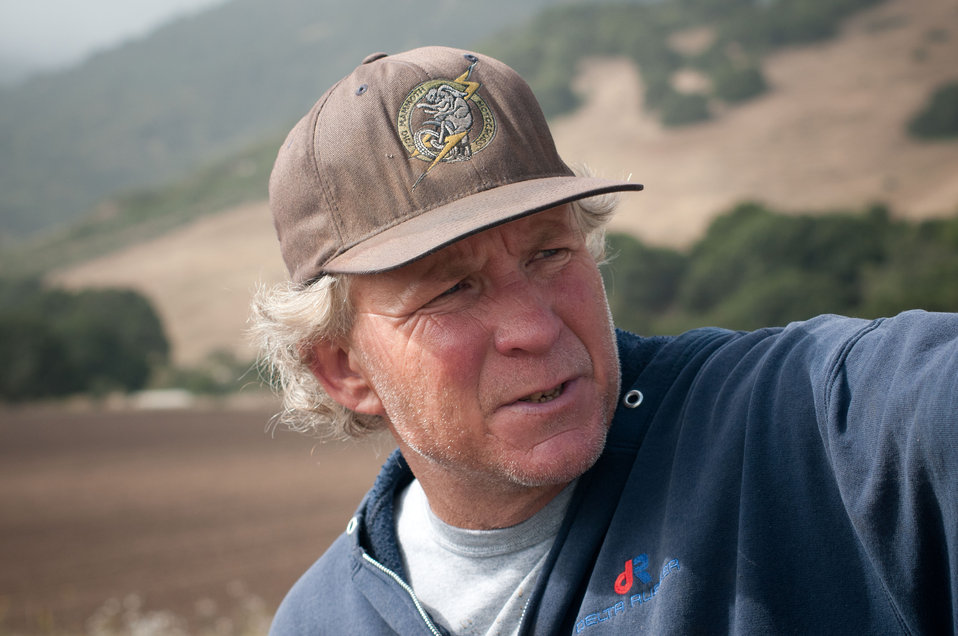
Farmer Tom Heess at Leafy Greens, in the Salinas Valley, California on Thursday, June 16, 2011. Leafy Greens grows row crops of lettuce, broccoli, cauliflower sweet peas and seed beans. He uses rotational crop plantings to control weeds and plant disease. When a plot of land is at rest, he plants a cover crop of barley and rye grass because the roots hold the topsoil reducing erosion of the soil. He is converting his irrigation system from conventional sprinklers to micro irrigation. Where one system produces runoff and erosion of the soil; the other has little or no erosion, less maintenance, easy harvest and less water is needed. When seasonal rains produce runoff, the silt that flows with it is caught in sediment ponds. The ponds have grass, bushes and trees to hold the structure and allow the silt to settle. Spillways lead to holding ponds and eventually the Salinas River, a tributary of the Monterey Bay National Marine Sanctuary. So far, because of its design and efficiency, no water has made it to the river.